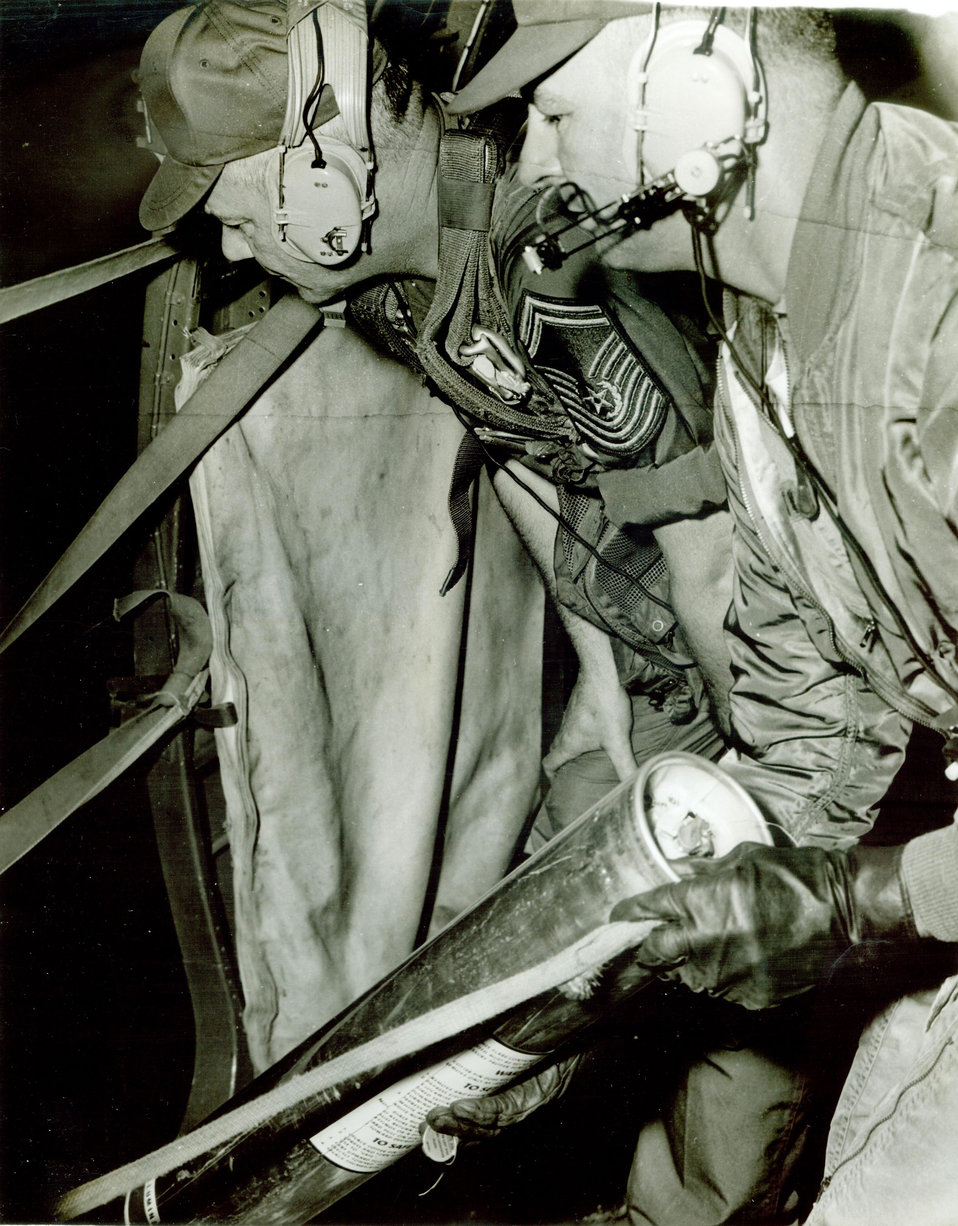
Enlisted perspective remembers the 'first'

Chief Master Sgt. Paul Airey was selected as the first chief master sergeant of the Air Force on April 3, 1967. During his tenure he visited many bases and talked with many Airmen about improving conditions for the enlisted force.